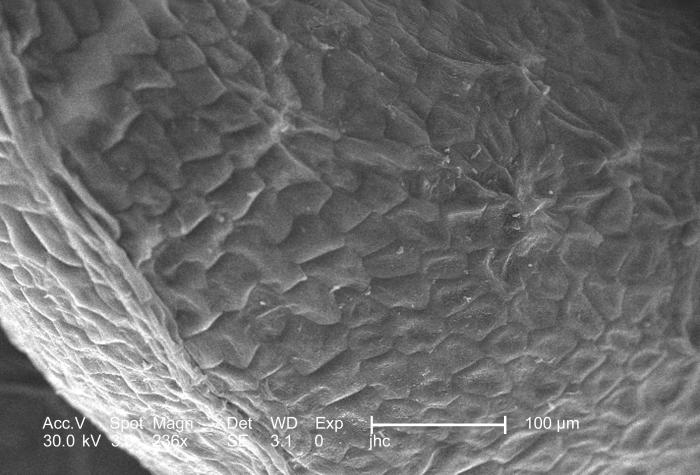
Under a higher magnification of 236x, this scanning electron micrograph (SEM) depicted a detailed view of the clustered exterior of a commonly growing wild strawberry, Fragaria virginiana, that was found growing in Lullwater Park, inside the Decatur, Georgia suburbs. The F. virginiana fruiting bodies are very similar to the more familiar store-bought varieties, and those who've tasted these fruits say that they're quite delicious.